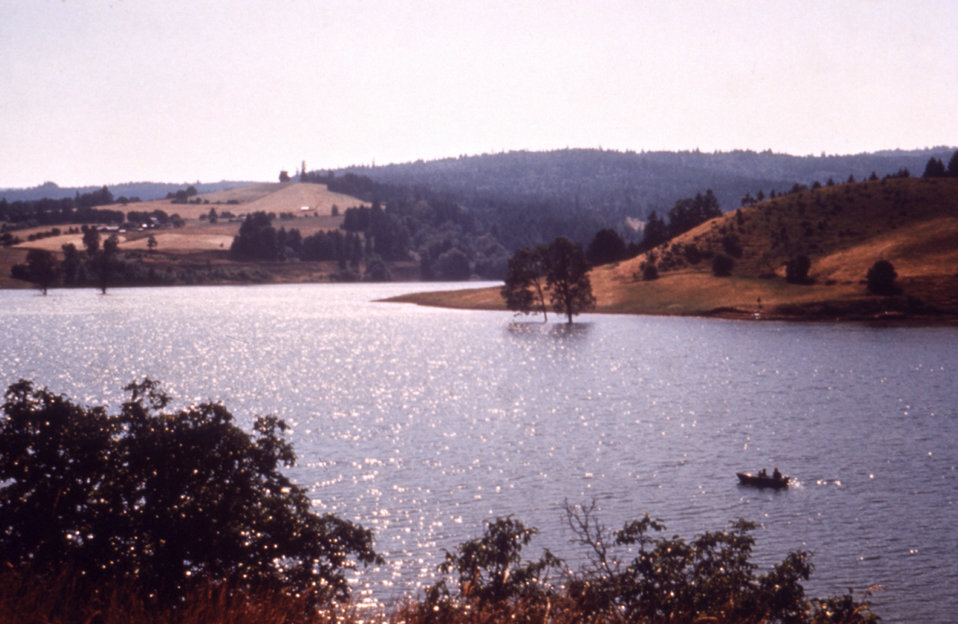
This 1976 photograph showing a fishing boat upon an Oregon lake was taken during a CDC vector-borne disease investigation.